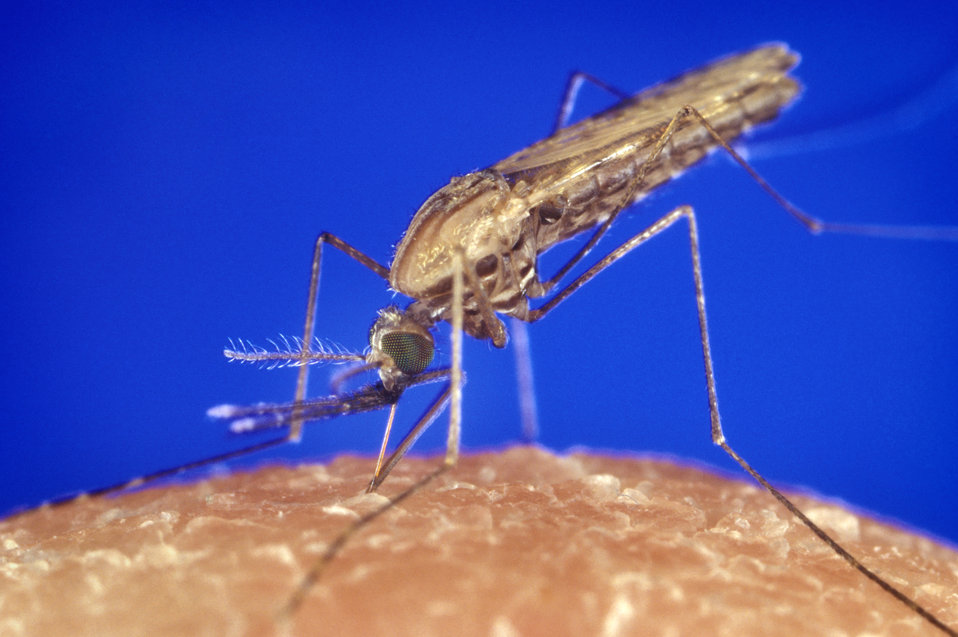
Anopheles gambiae mosquito feeding